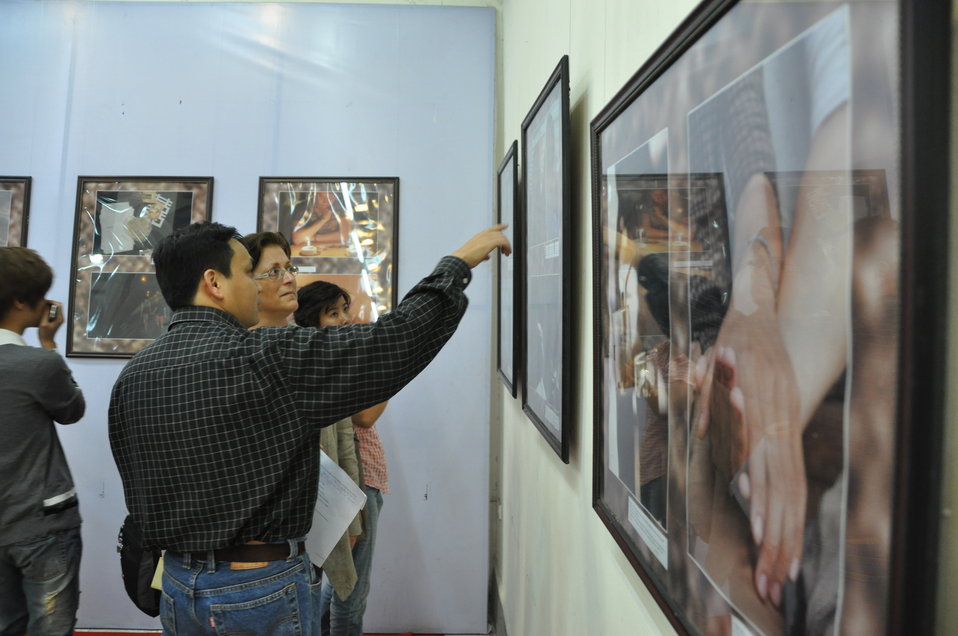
Moments in Life Exhibit: PEPFAR